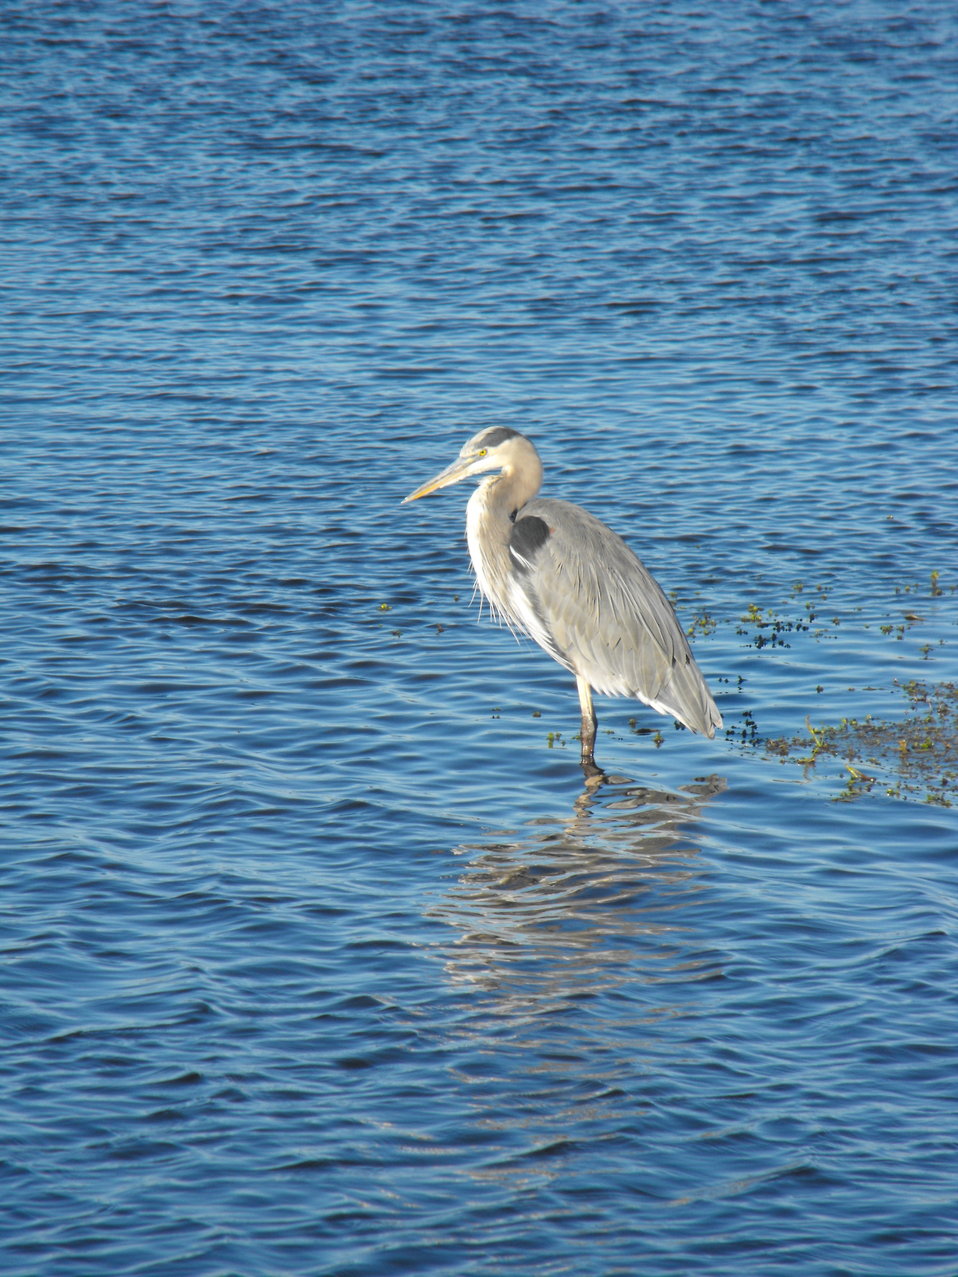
Great blue heron

A great blue heron off the Wildlife Loop at Chincoteague National Wildlife Refuge.